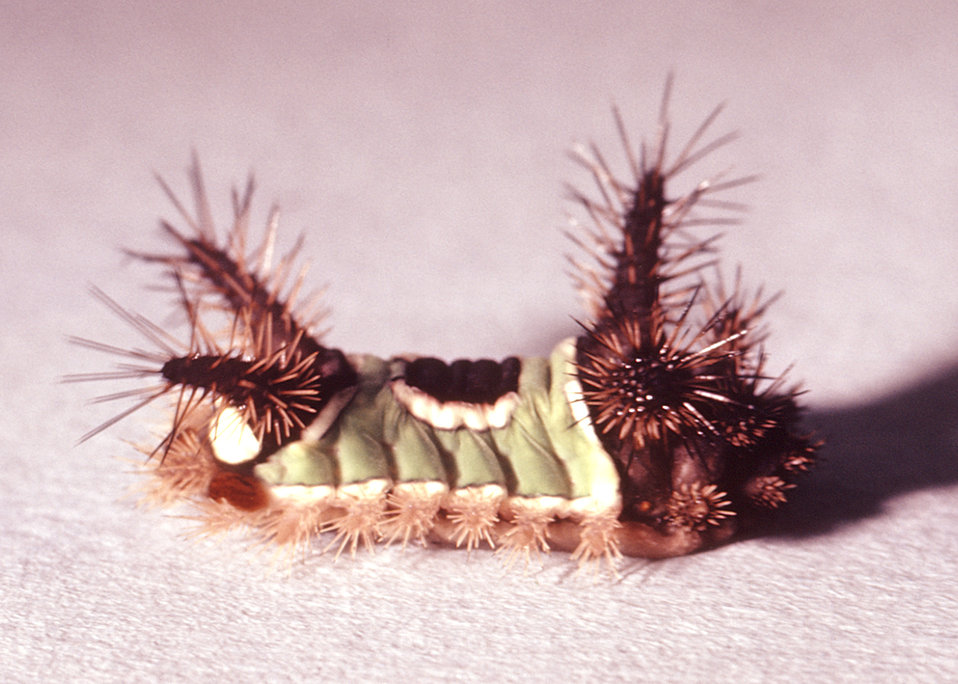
This is a lateral view of a saddleback caterpillar, Sibine stimulae, an urticating, or hive-producing caterpillar.